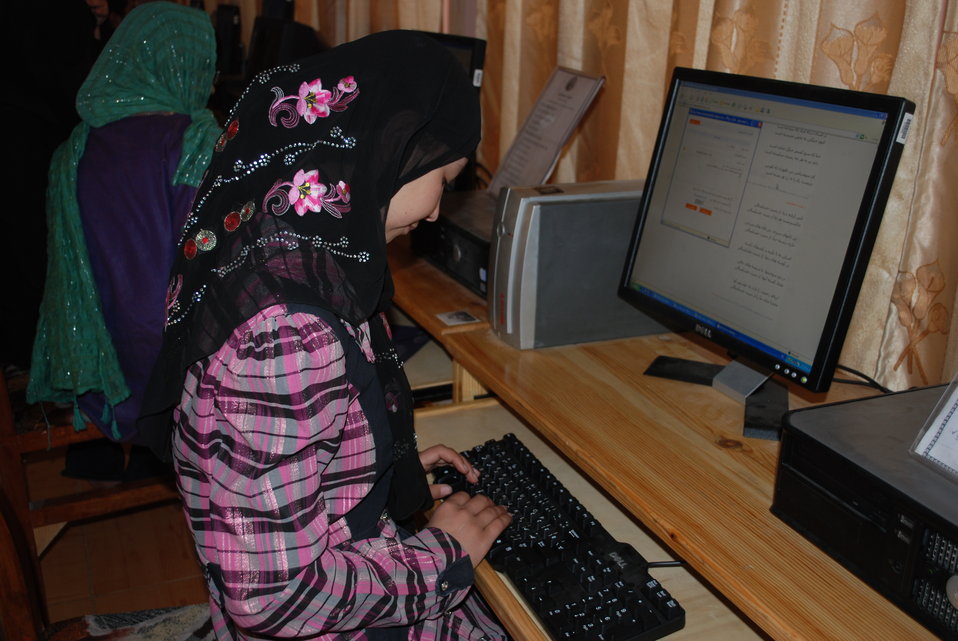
'On the Road' in Balkh Province